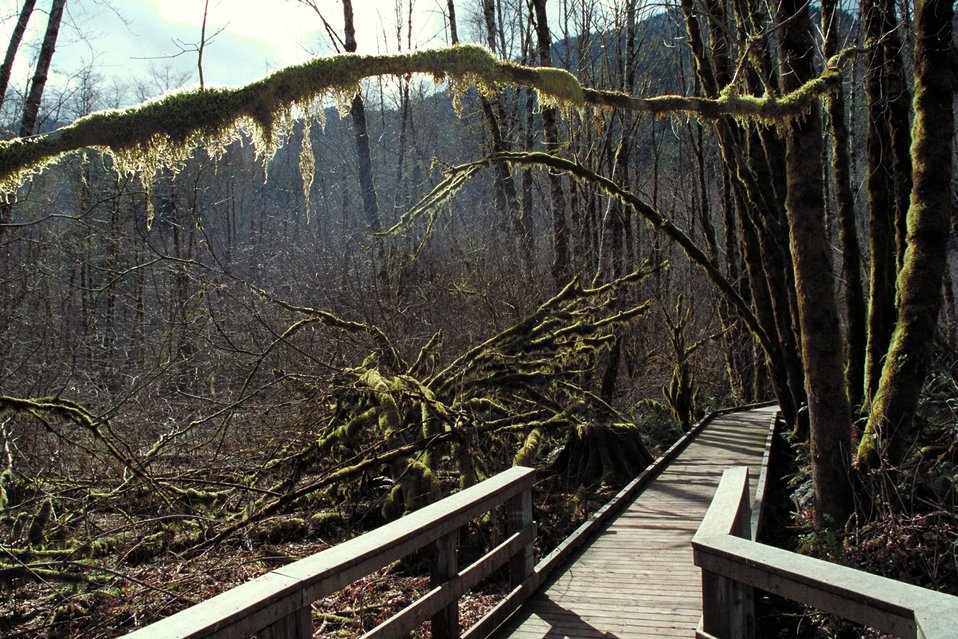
Cascade Stream Watch is an environmental education program conducted at BLM's Wildwood Recreation site.